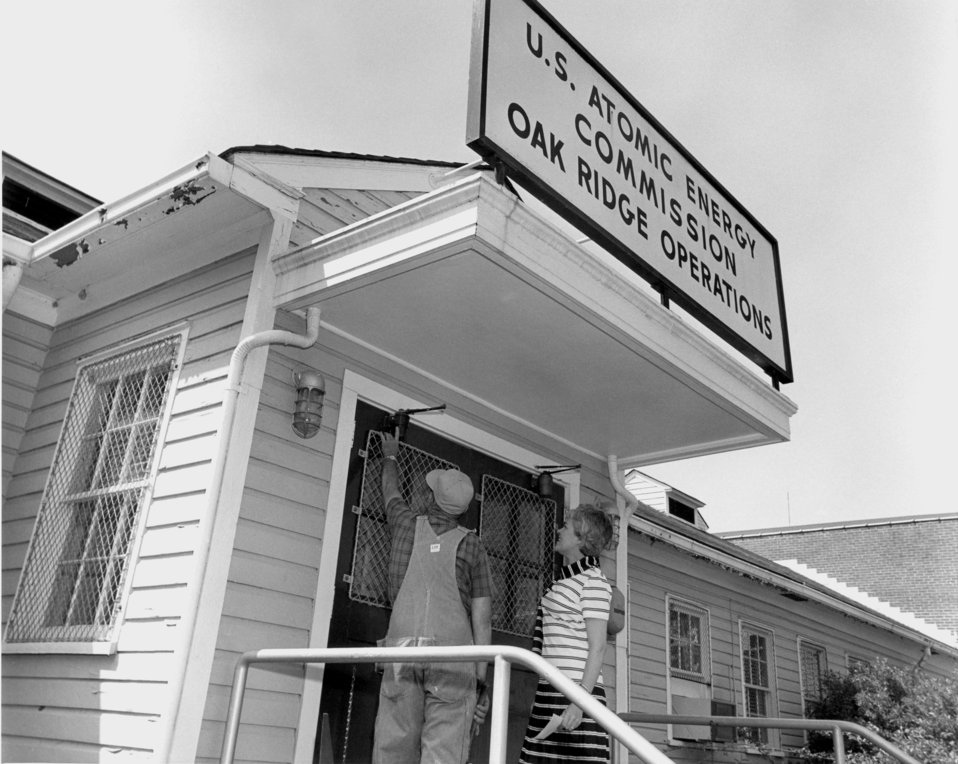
Adm. Blg. AEC Oak Ridge

70-1 DOE photo Frank Hoffman 1970 Oak Ridge Tennessee